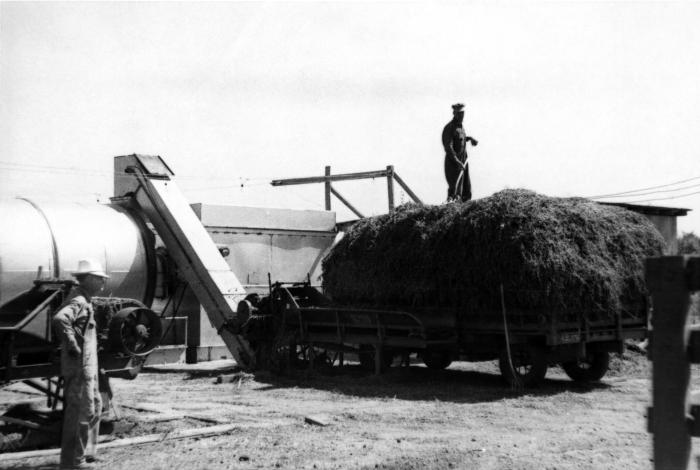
This 1947 historical photograph was provided by the Center for Disease Control's (CDC), National Institute for Occupational Safety and Health (NIOSH). The image showed two men who were operating agricultural processing machinery, which appeared to be a hay shredder. The hay that had been stcked on a hay wagon, had been pulled up alongside the shredder, which after chopping the hay into small pieces, conveyed the grass up a shoot, which was then dumped into a large holding containment vessel at the far left. At the time, this process was taking place on a Kansas farm. This image was part of a collection that was used to document the many aspects of various industrial activities, so as to better understand these workplace environments, and their associated hazards. In gaining a better understanding of workplace hazards, protocol-formulating bodies such as NIOSH, are better able to create a safer workplace through substantiation of appropriate safety regulations.